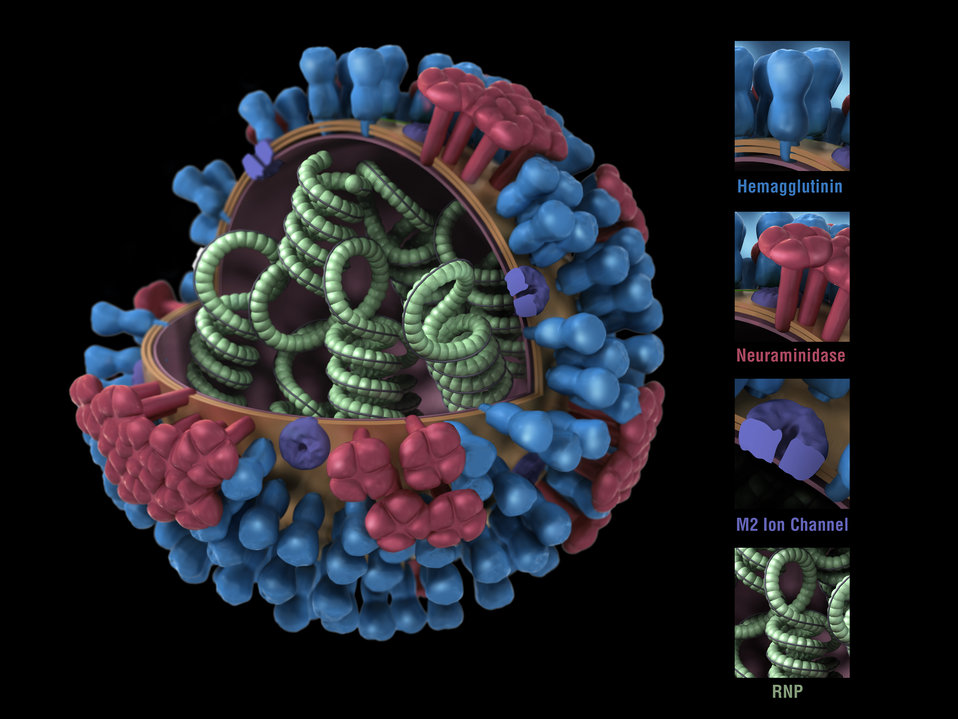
This illustration provides a 3D graphical representation of a generic influenza virion's ultrastructure, and is not specific to a seasonal, avian or 2009 H1N1 virus. In this particular view, a portion of the virion's protein coat, or 'capsid', has been cut away, revealing its inner nucleic acid core proteins. Note the key to the right identifying the virion's protein constituents. For a fully intact, complete view of this virus, see PHIL 11829.